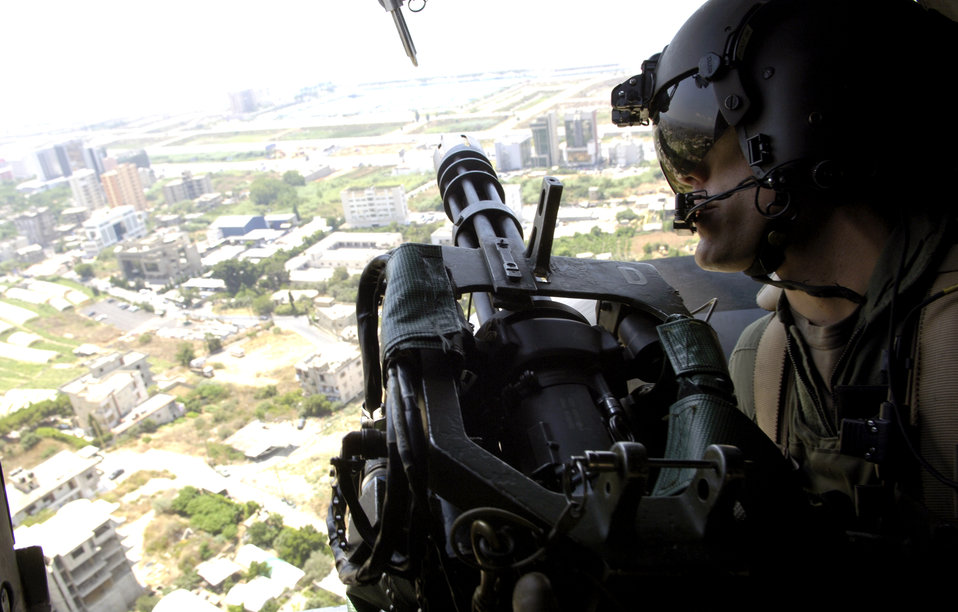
Lebanon operations

BEIRUT, Lebanon (AFPN) -- Master Sgt. Danny Leick checks the right side of an MH-53M Pave Low helicopter over the city here July 24. Sergeant Leick is a flight engineer with the 352nd Special Operations Group at Royal Air Force Mildenhall, England, and is deployed to help with the transportation of American citizens from Lebanon.